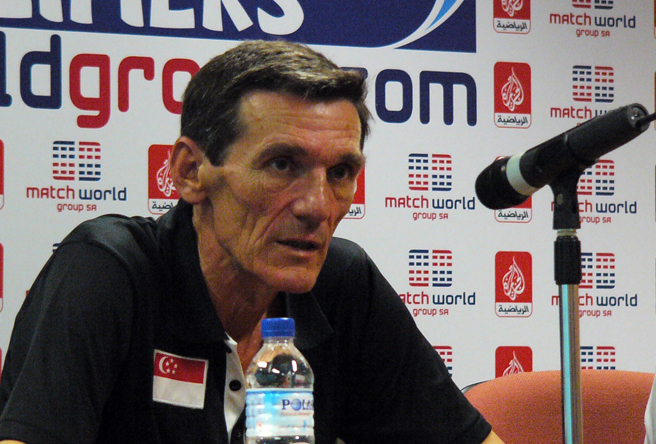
Radojko Avramović. I took this picture during the Singapore vs Lebanon international football match